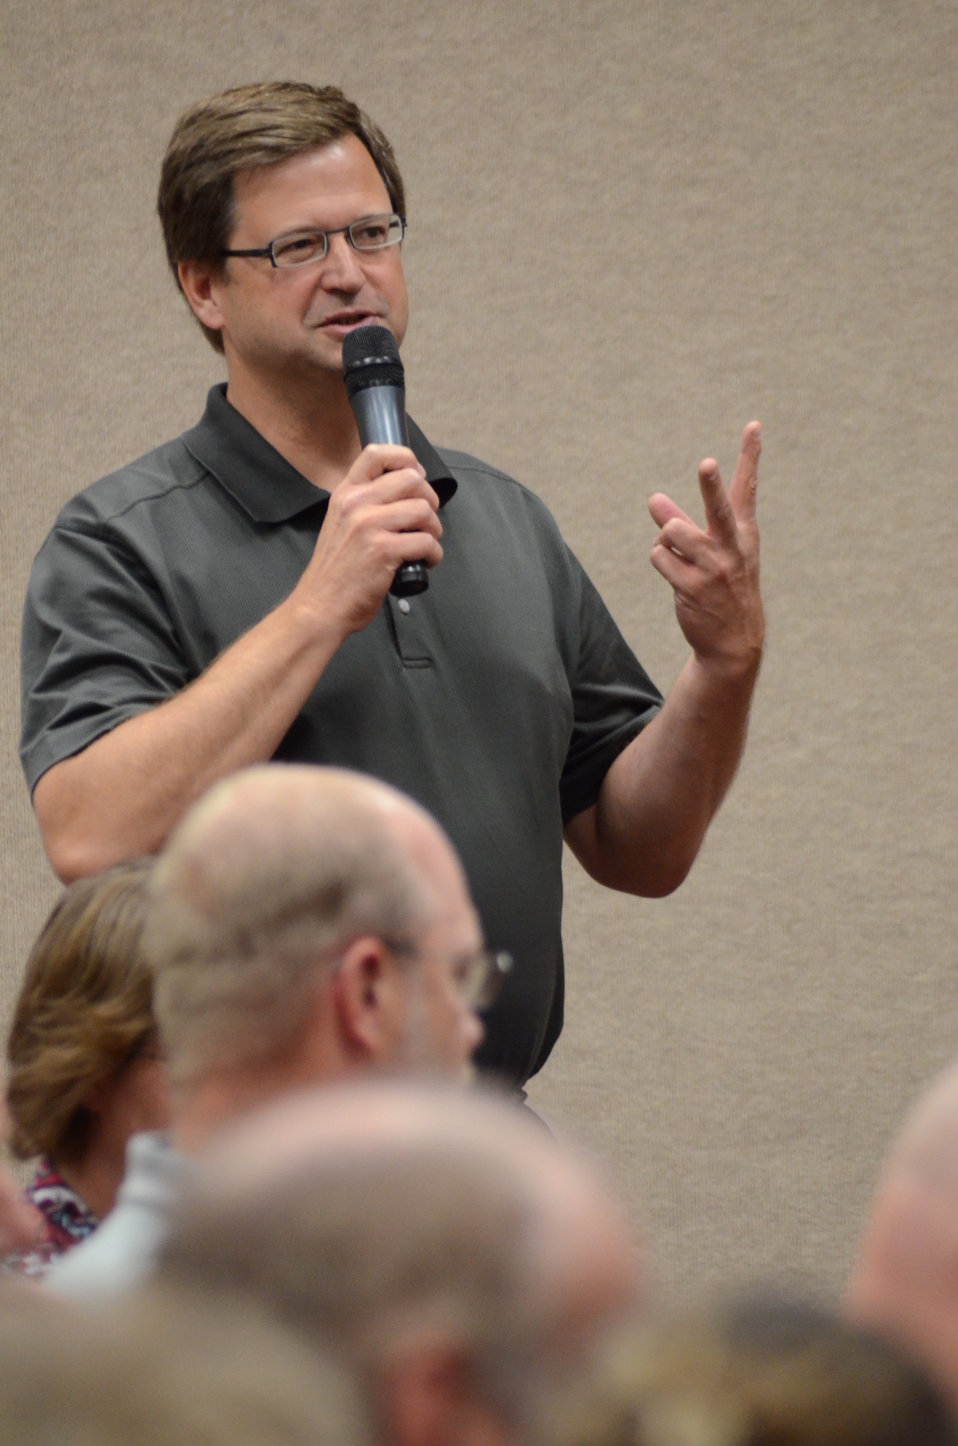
A member of the audience asks Agriculture Secretary Tom Vilsack speaks at the White House Rural Forum at the Wisconsin State Fair, in West Allis, WI, on Thursday, Aug. 4, 2010, to businesses and community leaders, farmers and ranchers to explore ways federal, state and local officials can work together to improve economic conditions and create jobs. The forum is part of a series of White House Rural Roundtables that are being held across the country this summer with senior Administration officials.